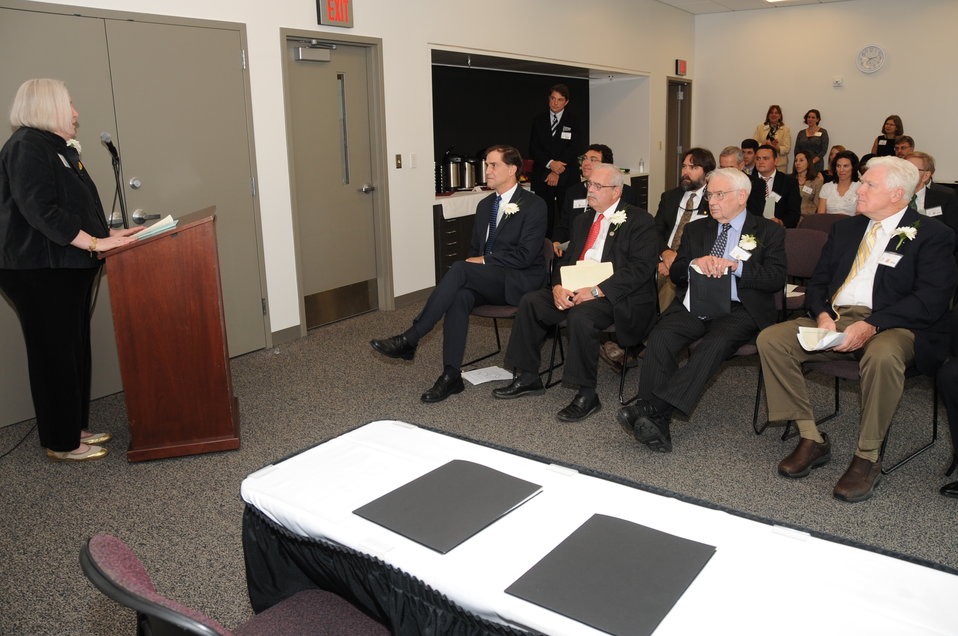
Together in Conservation

Memorandum of Understanding Signing Ceremony with U.S. Fish and Wildlife Service, Smithsonian Institution, and George Mason University. October 26, 2012